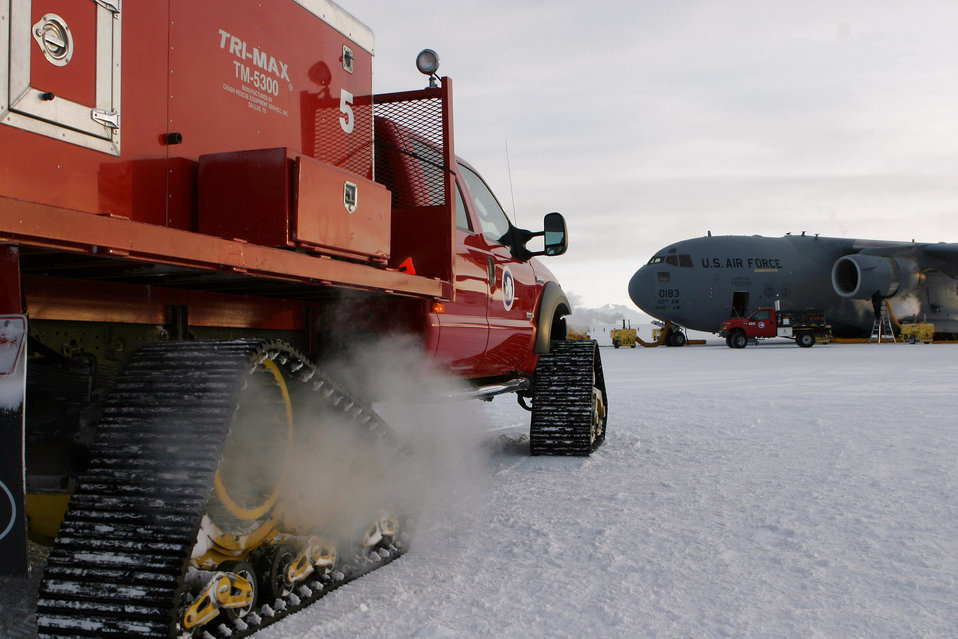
It's co-o-old outside...

A rescue vehicle waits to assist a C-17 Globemaster III if necessary as the aircraft delivers people and supplies Sept. 7 to McMurdo Station, Antarctica. The flight supports the U.S. Antarctic Program.